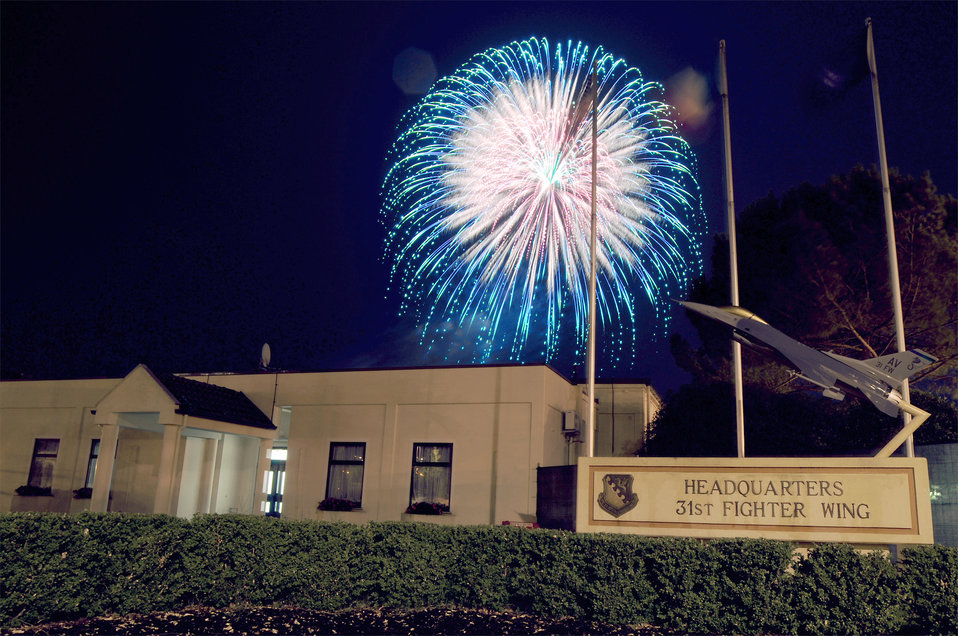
Fireworks light up the night...

Fireworks light up the skies over Aviano Air Base, Italy, during the Fourth of July celebration in 2009. The festivities consisted of various events throughout the day and concluded with the fireworks display.